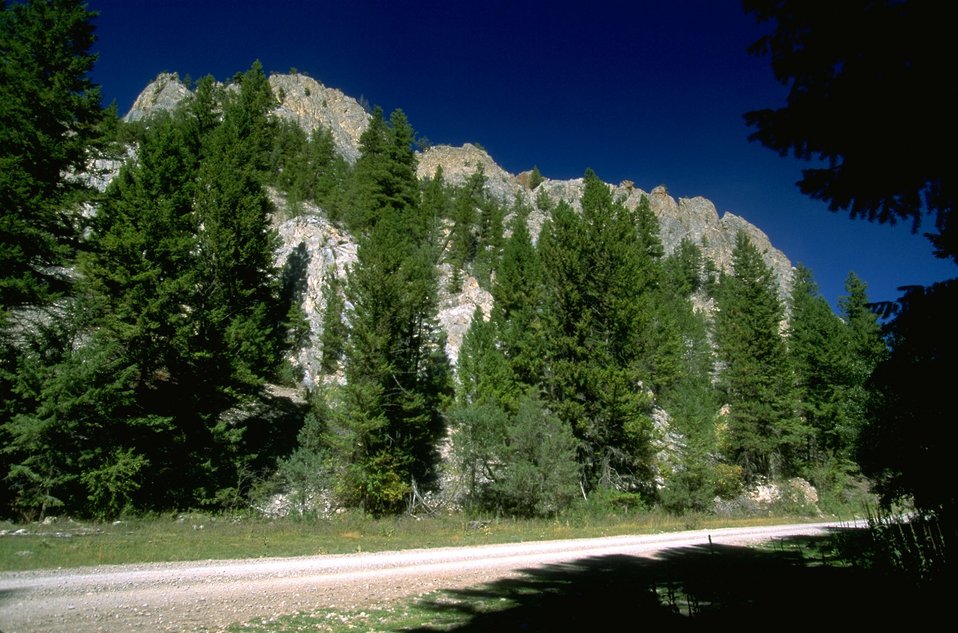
Rattler Gulch-Limestone Cliffs ACEC